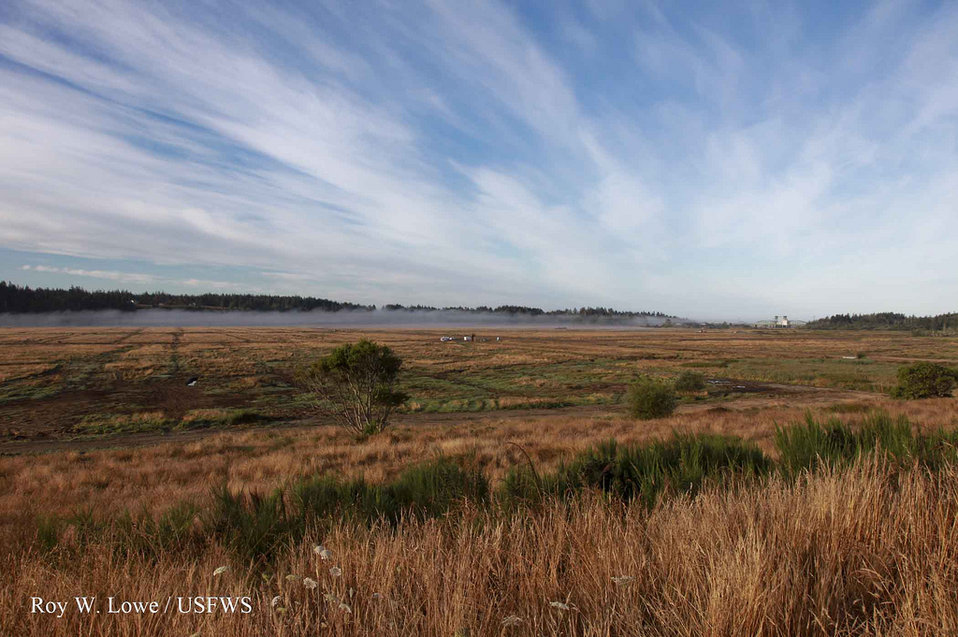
Early morning

An early morning view of the Ni’let’tun Unit taken from North Bank Lane near the refuge office. Fall is in the air!
NOTE: Photo is of the Ni-les'tun Tidal Marsh Restoration Project on the Bandon Marsh National Wildlife Refuge.